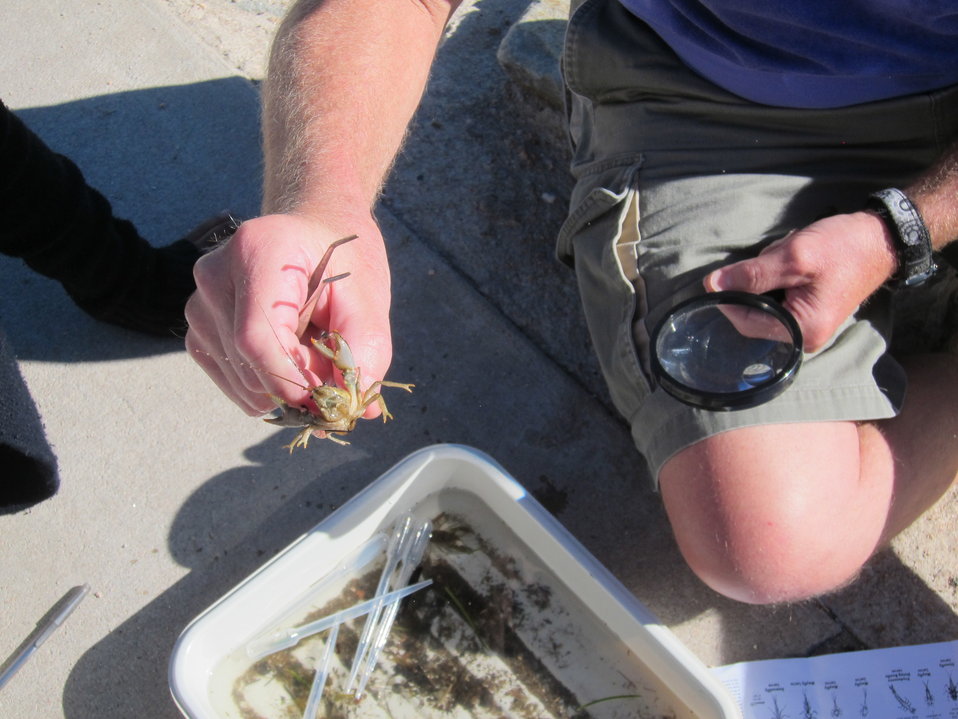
September 18, 2013 - Crawfish gets a closer look

An EPA volunteer holds up a crawfish caught in the waters of the South Platte River so elementary students could get a better look at this unhappy fellow.

Students spent time learning about the types of organisms that live in the South Platte River.

This Denver event was part of World Water Monitoring Day, 2013.